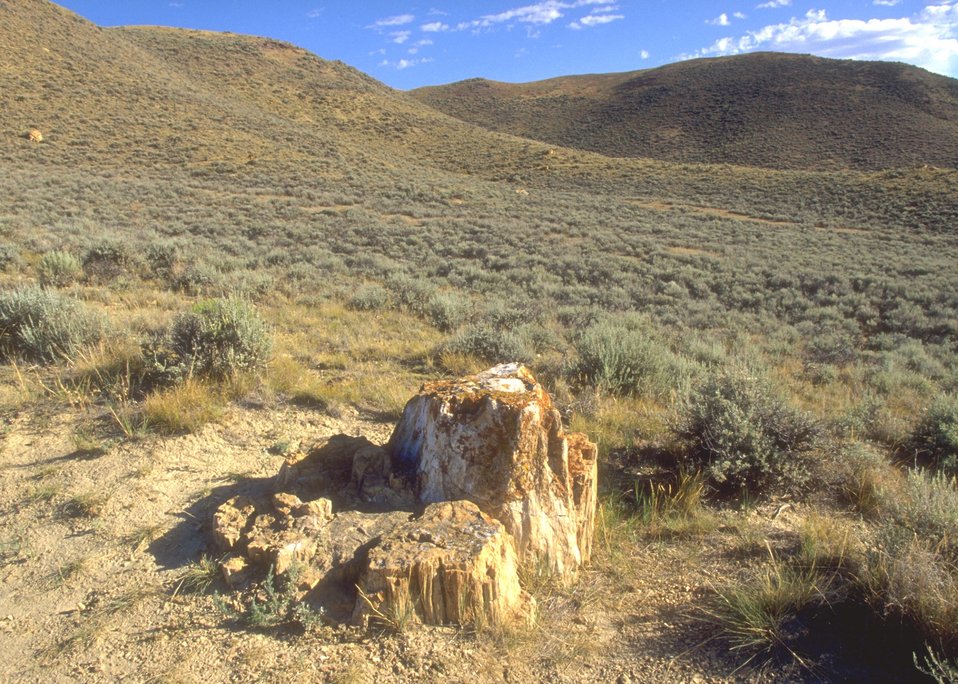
Dry Creek Petrified Tree Area, Buffalo Field Office.